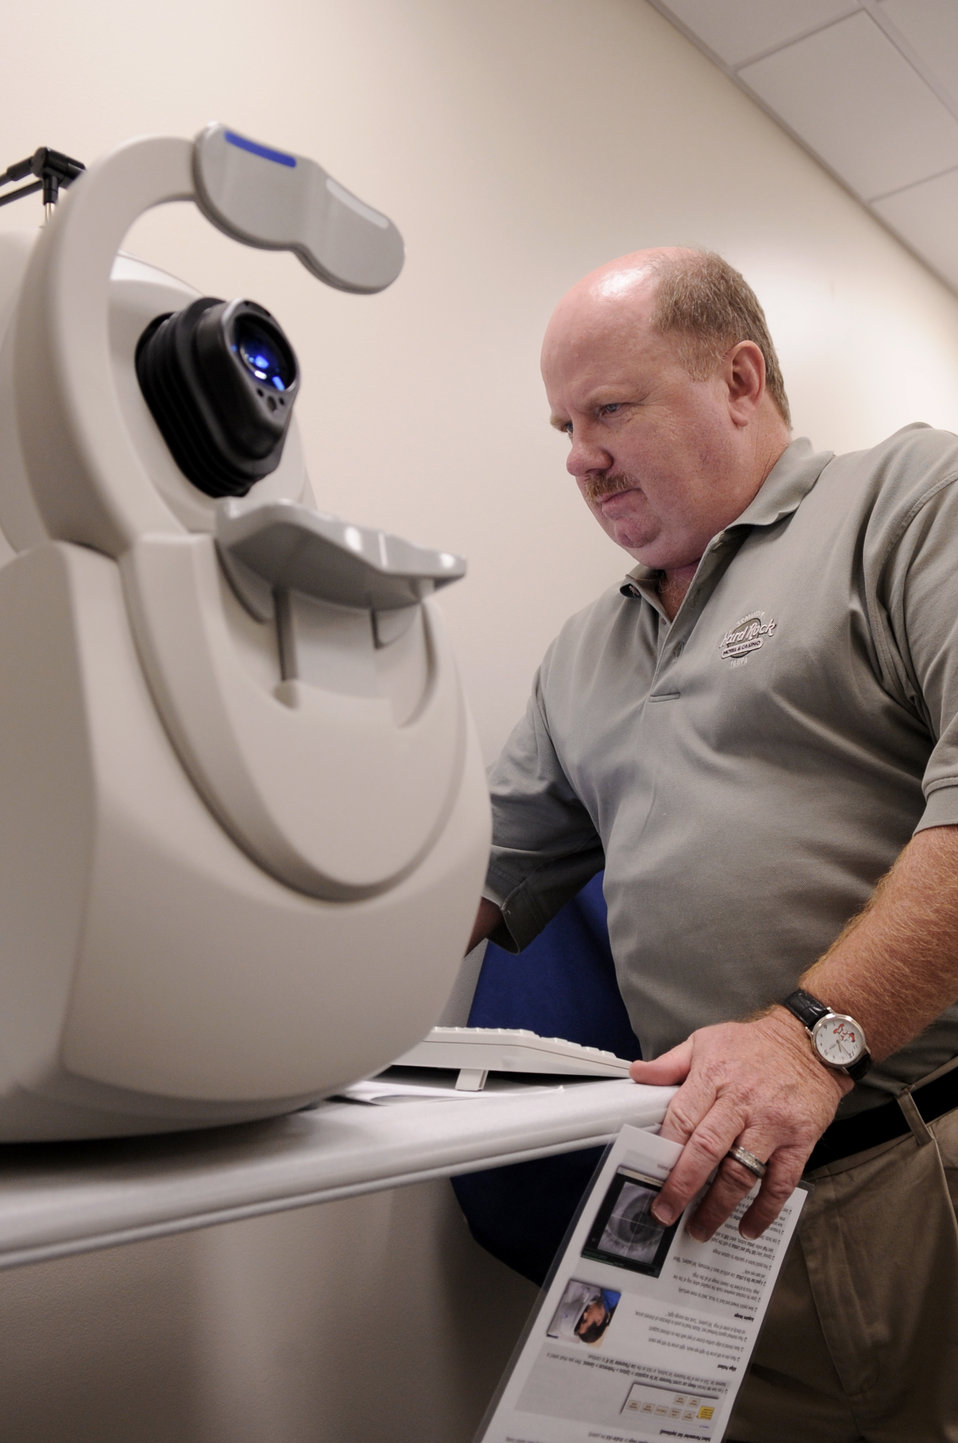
Retina imaging

Kevin Ott, a representative from manufacturer Carl Zeiss Meditec, Inc., sets up a high-definition optical coherence tomography machine Dec. 10, 2010, at Moody Air Force Base, Ga. With this new machine, optical technicians can clearly see behind and beneath the eye to make proper diagnoses.